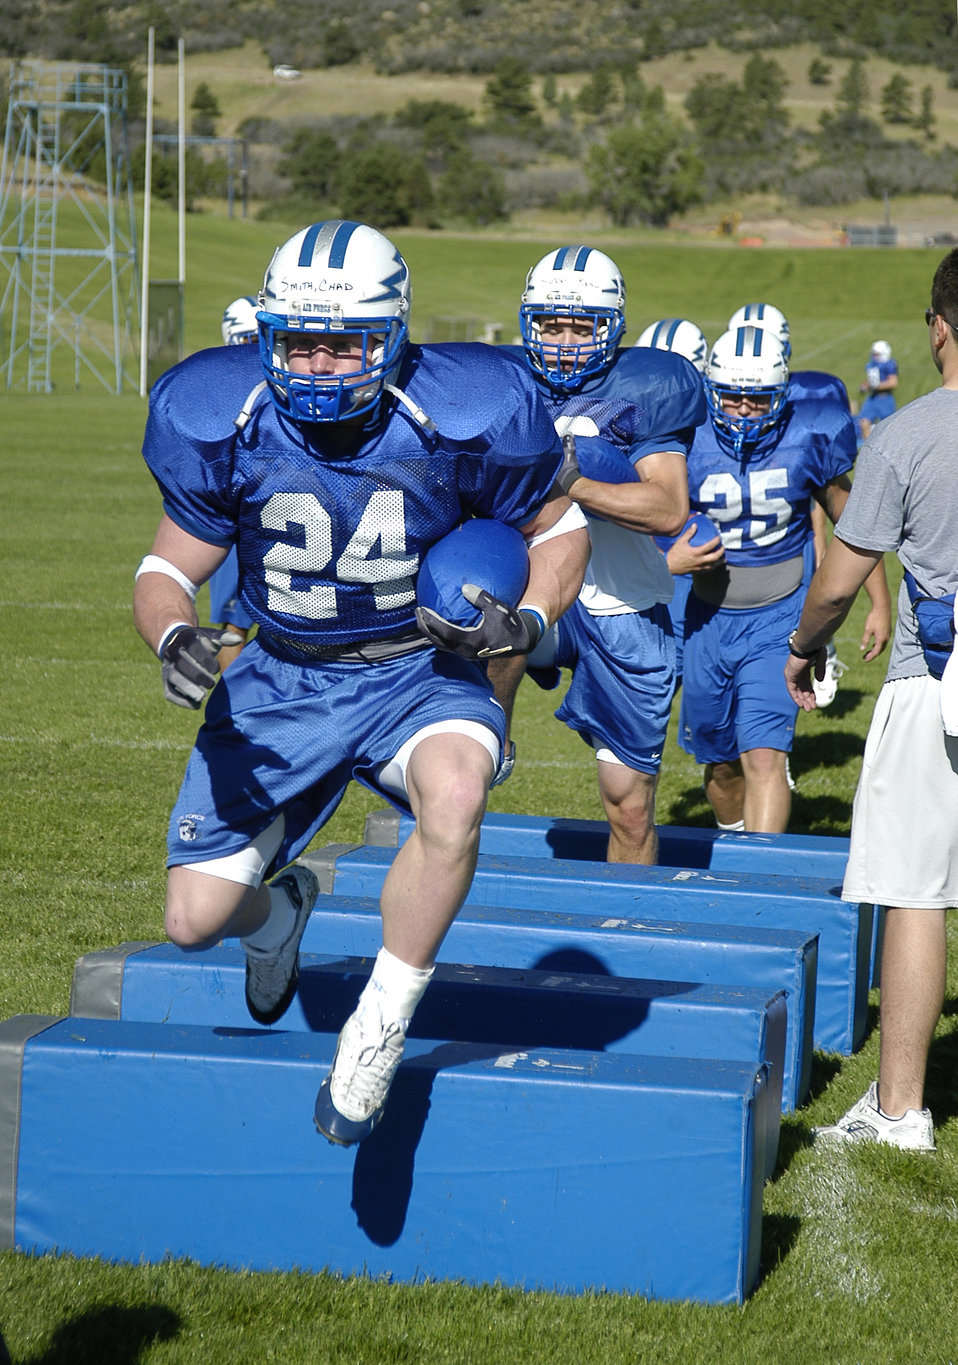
Falcons train

Falcons sophomore halfback Chad Smith leads fellow backs through an agility drill. Smith ran 34 times for 190 yards and one touchdown in the Falcons' triple-option rushing attack last season.